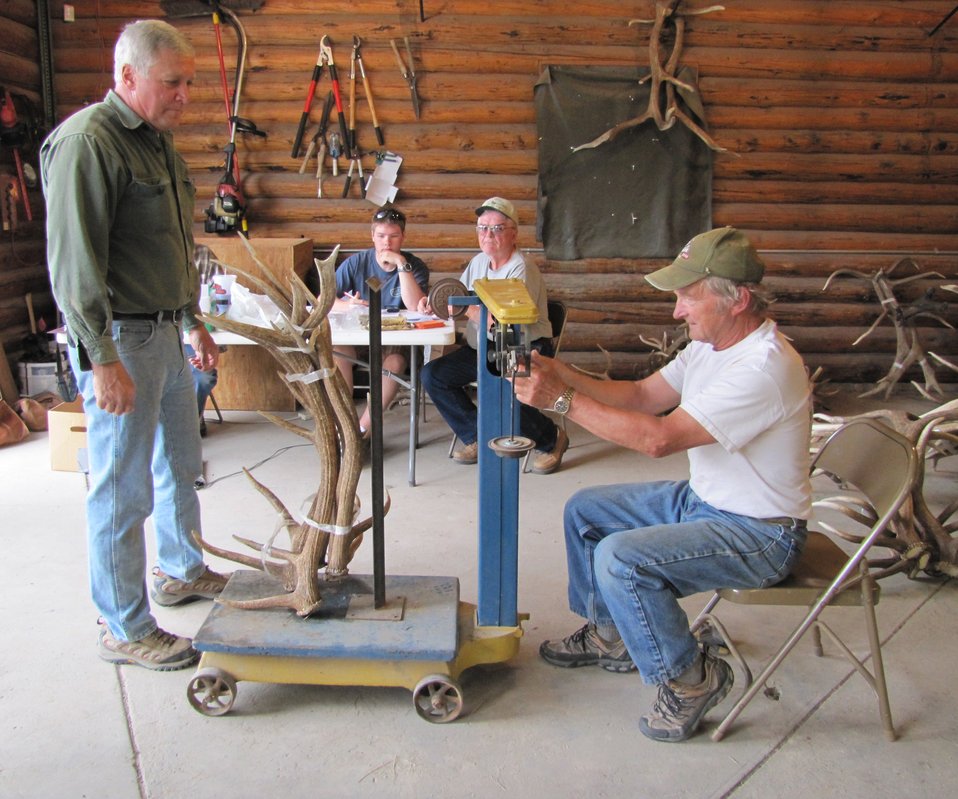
Weighing Bundles of Antlers

After the bundles are created, Jackson District Boy Scout leaders weigh and tag groups of antlers in preparation for the auction. During the auction, the antlers are sold per pound, so bidders need to know the total weight of lots they may be interested in purchasing.